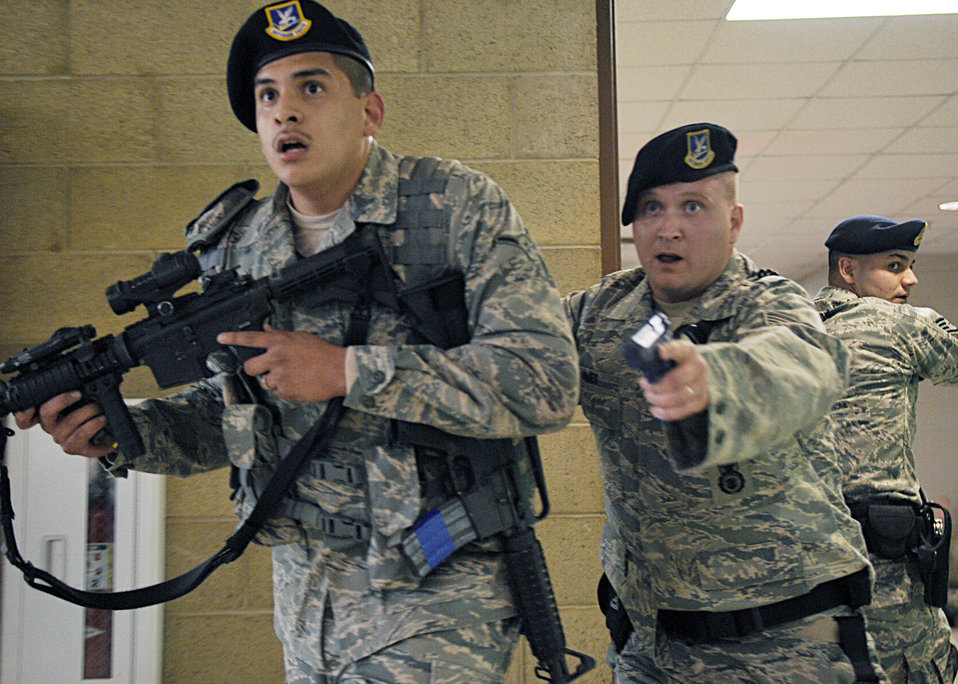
Holloman Airmen train for worst in active shooter exercise

Airman Pedro Escobar, Staff Sgt. Craig Ames and Staff Sgt. Michael Morris conduct a building sweep at the Domenici Fitness and Sports Center March 11, 2010, at Holloman Air Force Base, N.M. The active shooter exercise helped prepare the 49th Fighter Wing members for future exercises and possible real-world situations. Airman Escobar and Sergeants Ames and Morris are 49th Security Forces Squadron members.